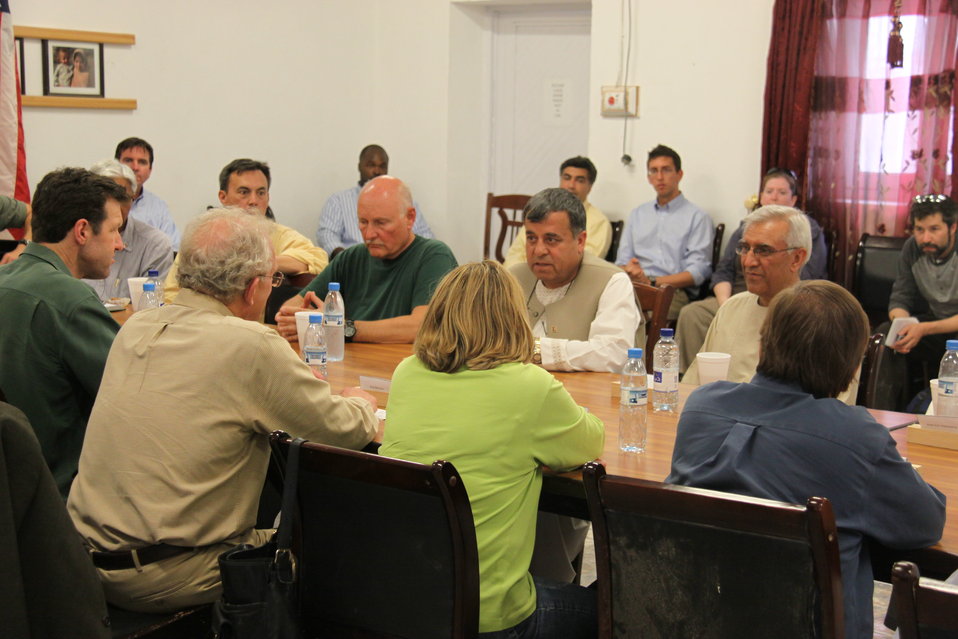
Meeting with Local Leaders in Kandahar